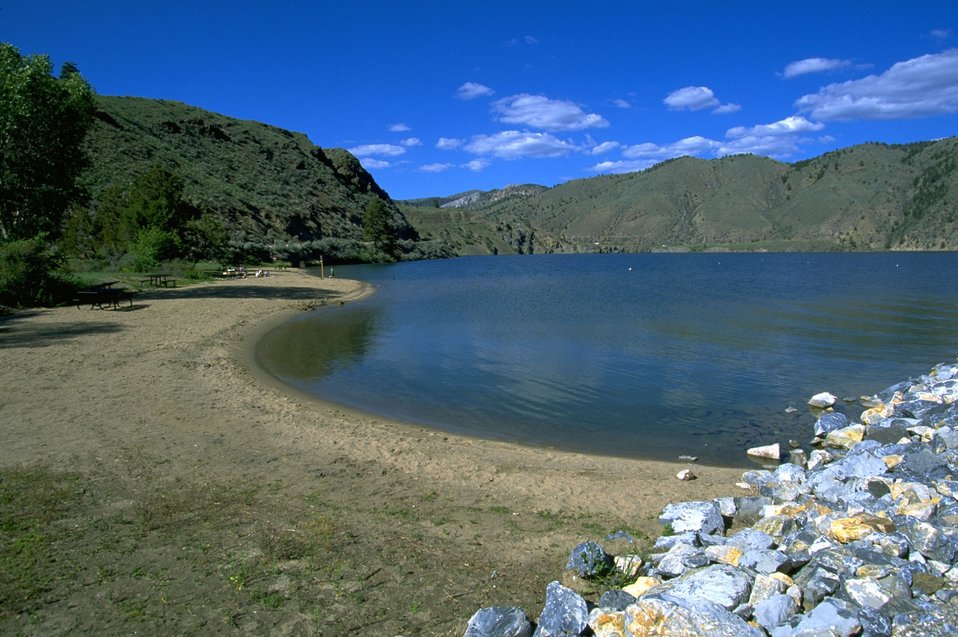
Shoreline along Hauser Lake